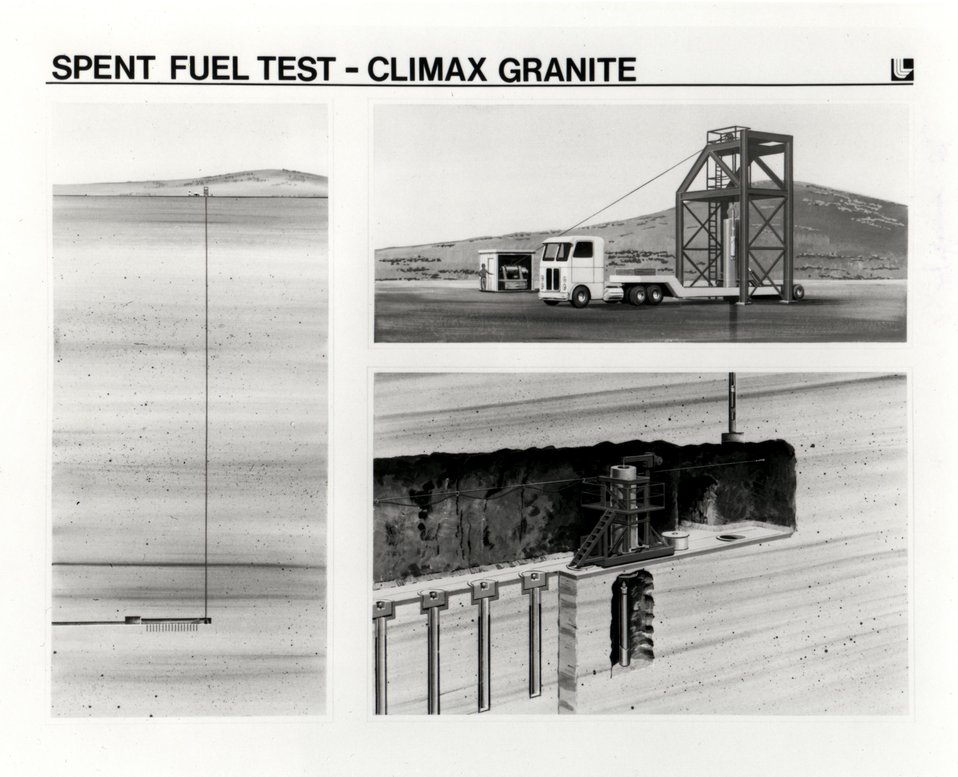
Spent Fuel Test - Climax Granite. c. 1980